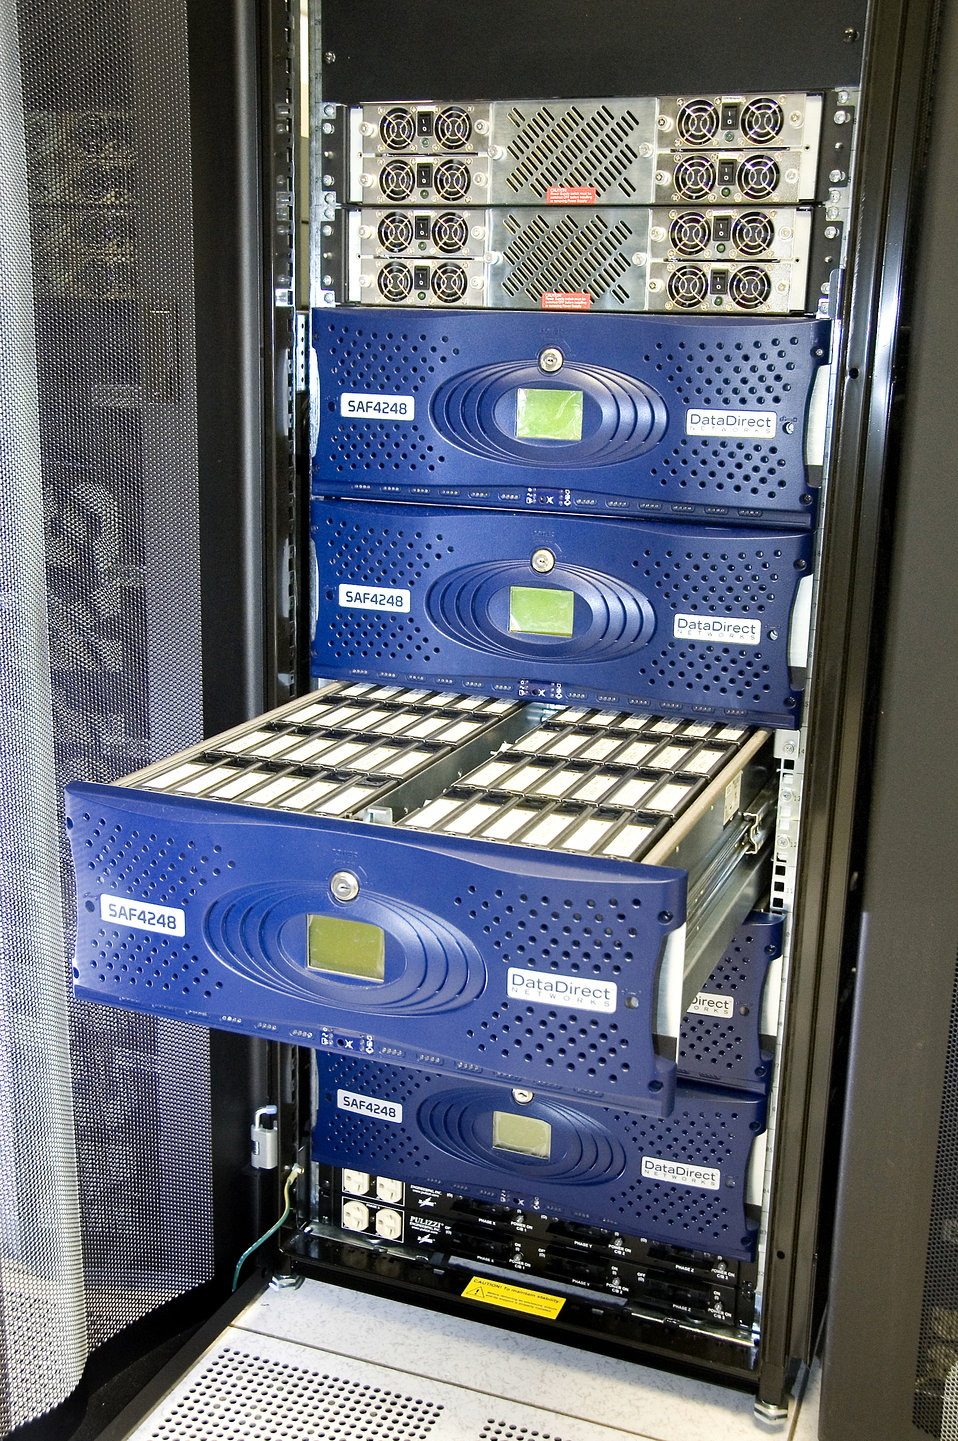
NEW YORK BLUE IS THE CENTERPIECE OF THE NEW YORK CENTER FOR COMPUTATIONAL SCIENCE (NYCCS).

New York Blue has an 18-rack configuration, a total of 36,864 processors and 18.4 TB of memory. It is the world's fastest supercomputer for general users and is expected to rank among the top ten fastest computers in the world. It is a cooperative effort between Stony Brook University and Brookhaven National Laboratory.